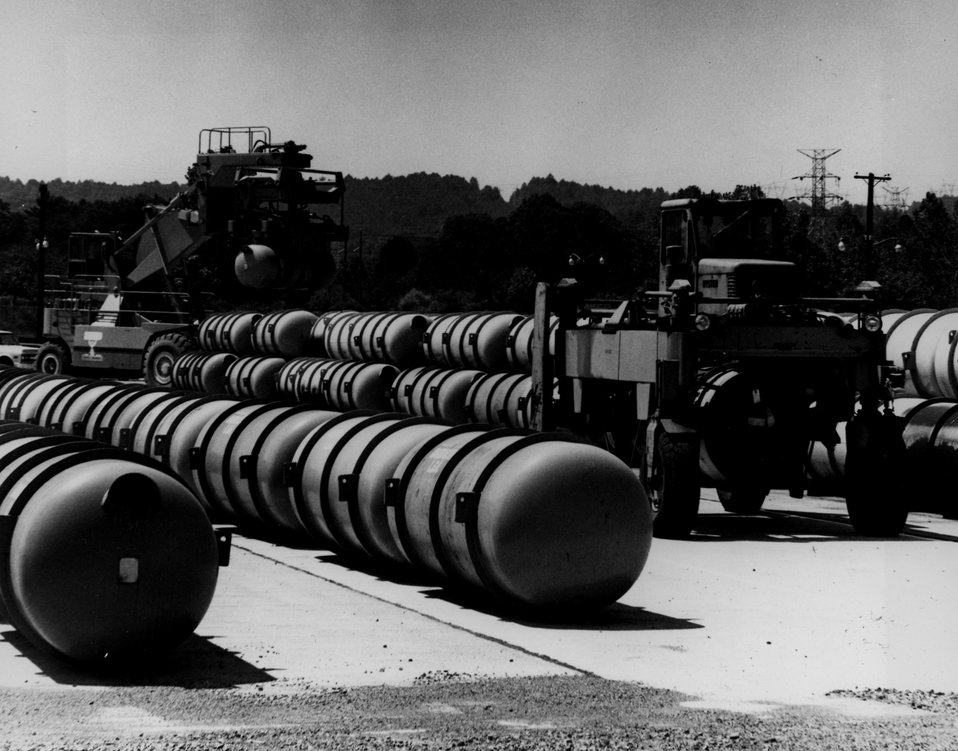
Uranium enrichment through gaseous diffusion. The large tanks weigh 10 tons and contain feed material, uranium hexaflouride, for the enrichment process carried out in the ERDA's gaseous diffusion plant at Oak Ridge, Tennessee; Pudacah, Kentucky and Portsmouth, Ohio. c. 1977